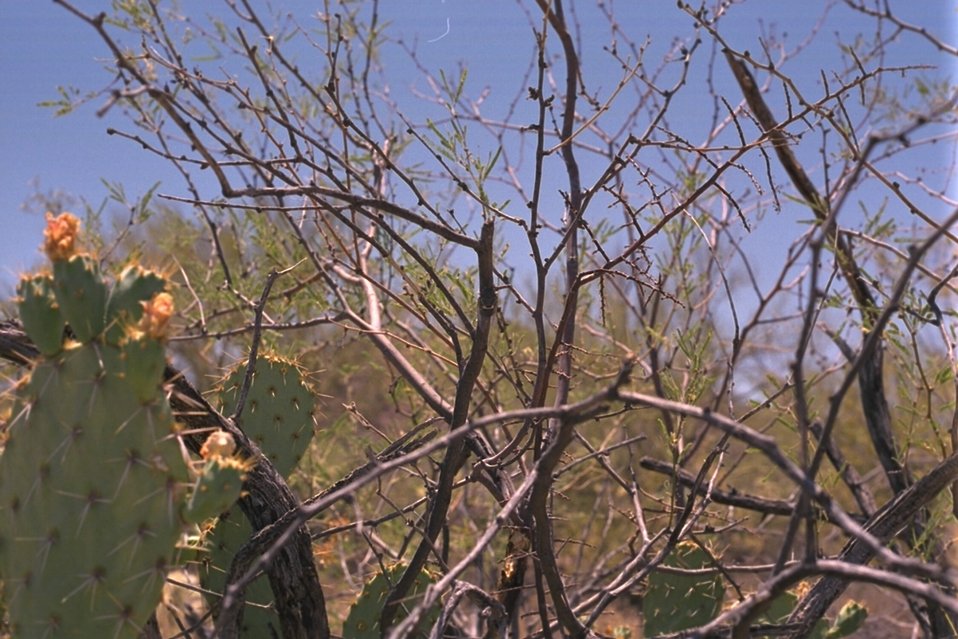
A great shot of a cactus in bloom in the Ironwood Forest Naitonal Monument.